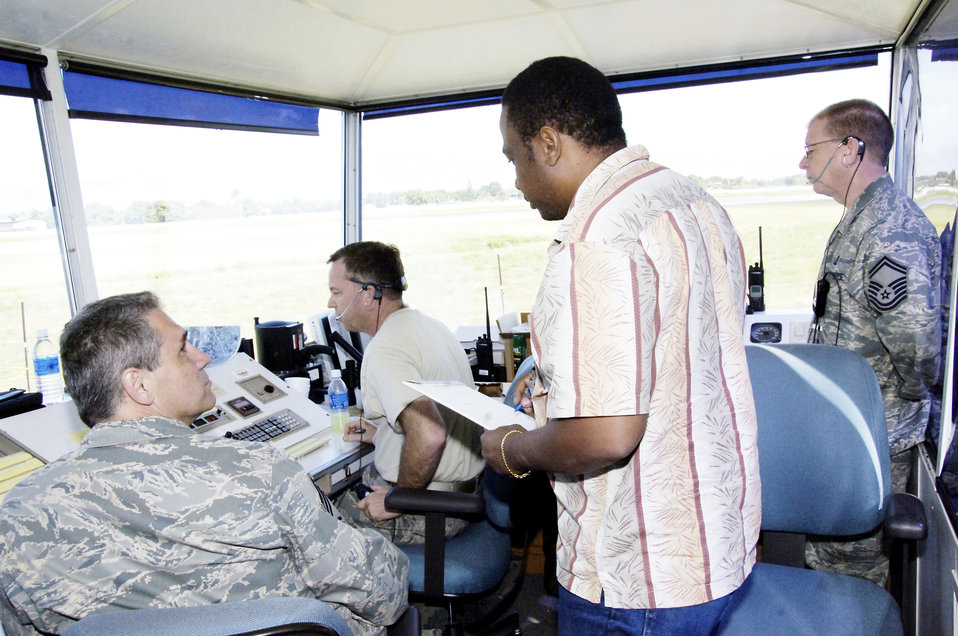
Transition to return tower to Haitian controllers begins

Reginald Bailey receives familiarization instruction from Air Force air traffic controllers in the mobile tower Feb. 1, 2010, at the airport in Port-au-Prince, Haiti. The transition is currently taking place to hand over the tower and all flight operations responsibilities over to the Haitians. Mr. Bailey is a Haitian air traffic controller.